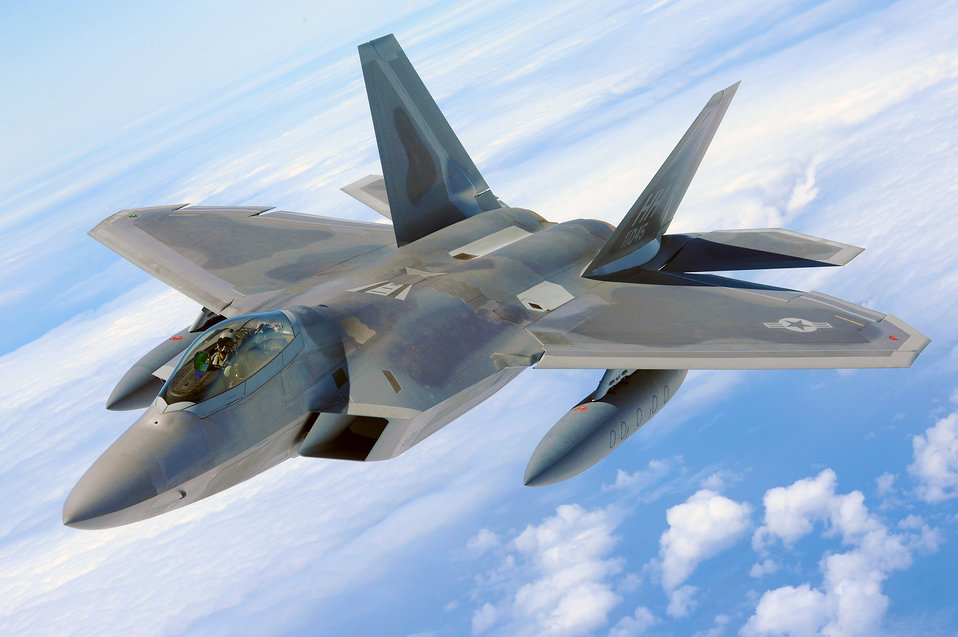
Hickam's total force integration

An F-22 Raptor soars through the air July 1, 2010, on its way home to Joint Base Pearl Harbor-Hickam, Hawaii. The first two F-22s, the U.S. Air Force's most advanced fighter jet, were dedicated July 9, 2010, at a ceremony here.